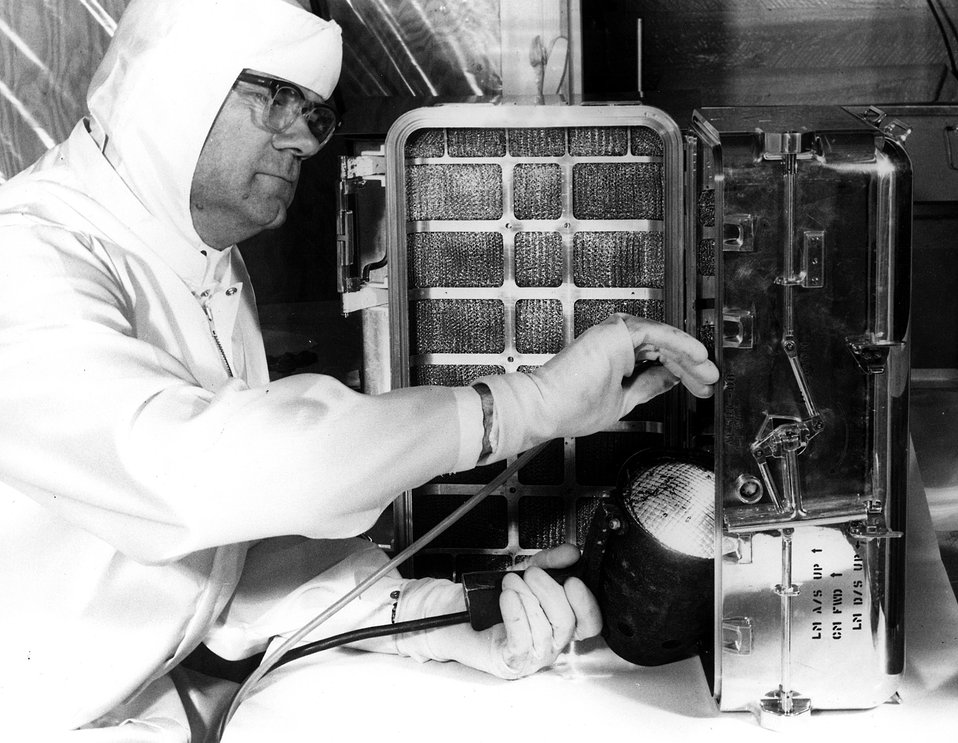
OAK RIDGE, TENNESSEE...MOONBOX...An ultraviolet light and a needle-sized vacuum cleaner were used to locate and remove dust particles from an Apollo moonbox at the AEC's Oak Ridge (Tenn.) Y-12 Plant. Circa 1969.